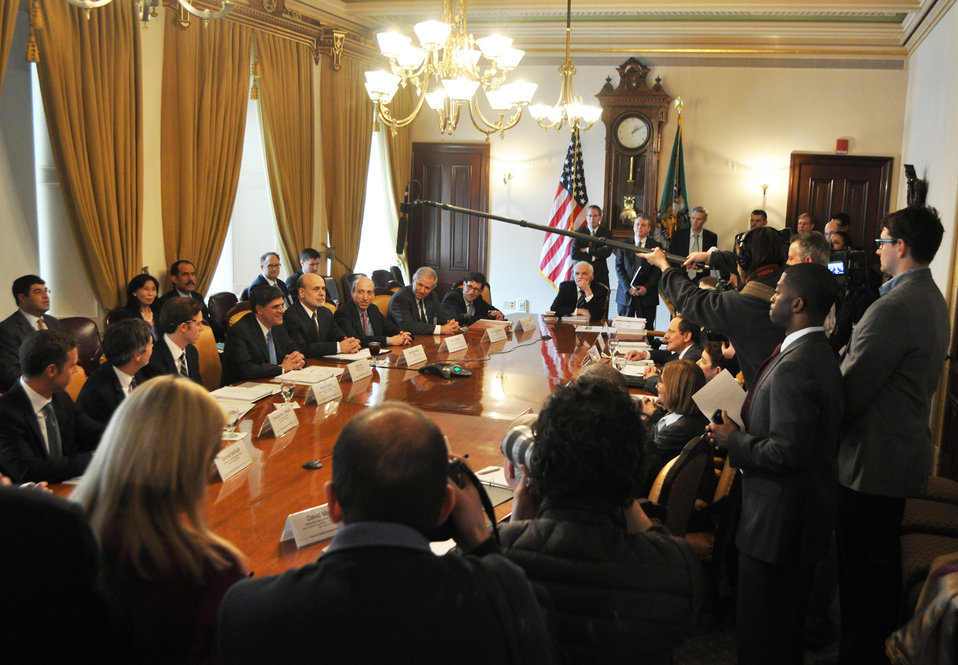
Secretary Jack Lew chairs the meeting of the Financial Stability Oversight Council (FSOC) at Treasury on February 28, 2013.